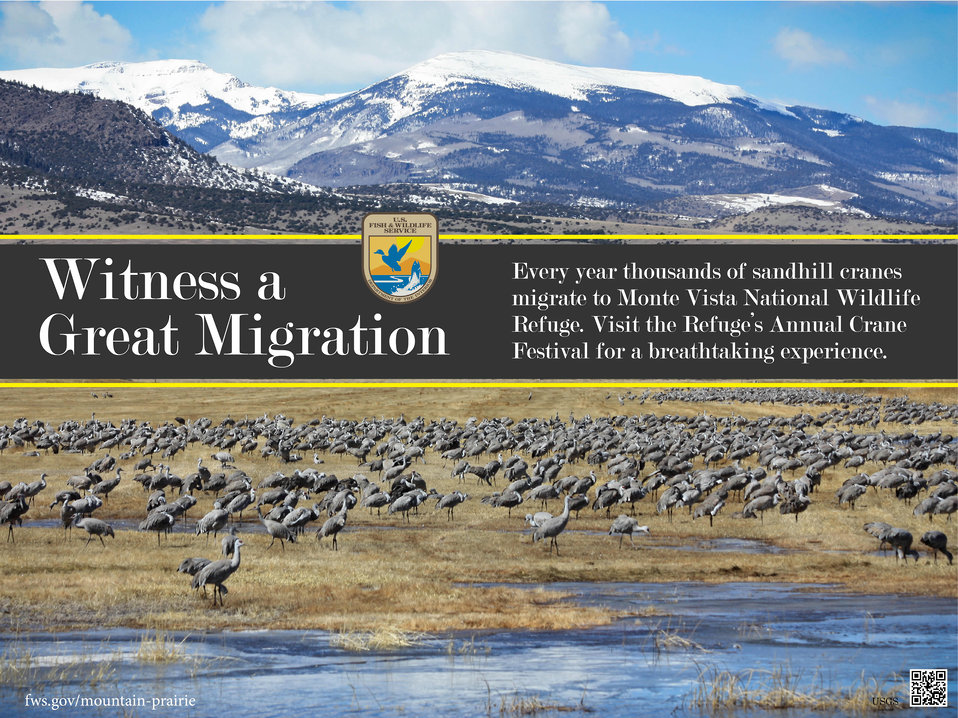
Witness a Great Migration

Late in February, sandhill cranes, the San Luis Valley’s oldest visitors, begin their annual trek from south to north, stopping off near the Monte Vista National Wildlife Refuge to load up on fuel. For millions of years, the sandhills have been spending their 'Spring Break' in Colorado’s Valley of the Cranes and more recently, wildlife watchers have been drawn to wonder at this phenomenal natural spectacle.